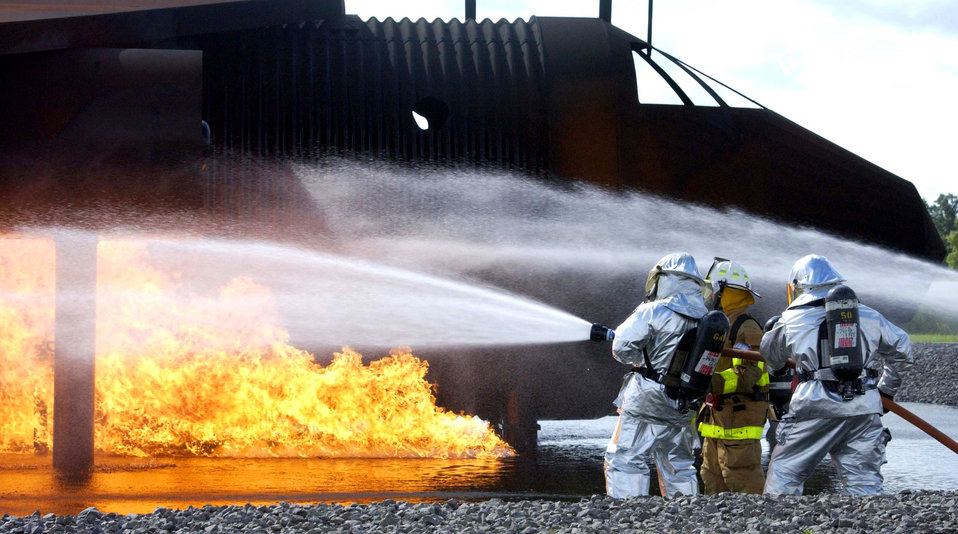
Flame fighters

NIAGARA FALLS, N.Y. (AFPN) - Firefighters from the New York Air National Guard's 107th Civil Engineer Squadron here practice extinguishing an aircraft fire during a training mission Sept. 20.